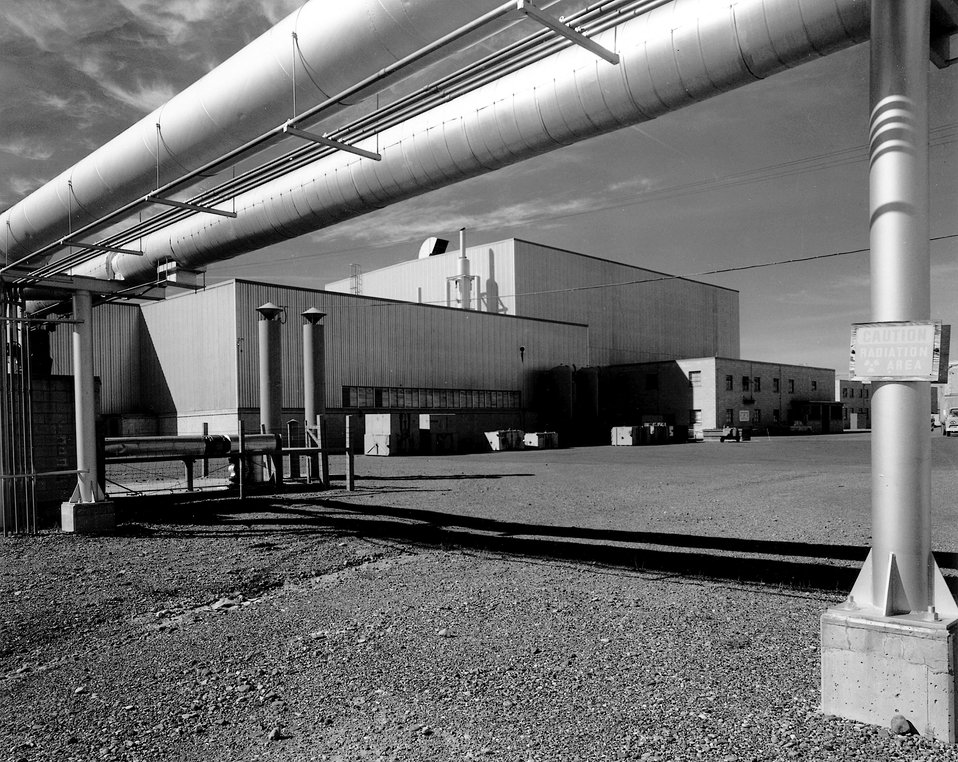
National Reactor Testing Station, Idaho... The Engineering Test Reactor building at the National Reactor Testing Station. Circa 1970.